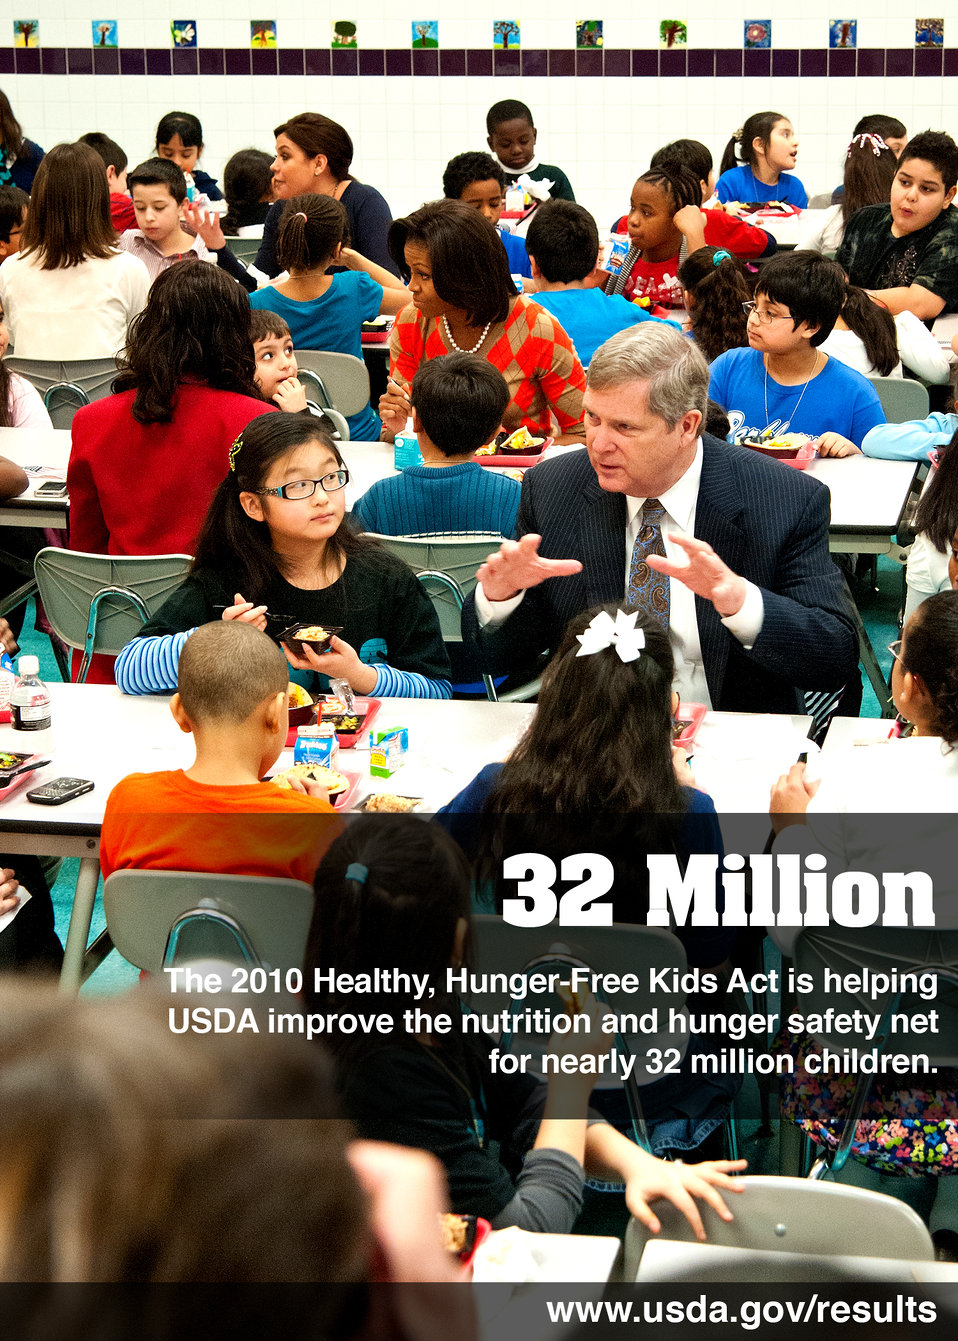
Print-Nutrition1

Agriculture Secretary Tom Vilsack joined First Lady Michelle Obama and celebrity cook Rachel Ray at Parklawn Elementary School in Alexandria, Virginia, on Wednesday, January 25, 2012 to speak with faculty and parents about the United States Department of Agriculture’s new and improved nutrition standards for school lunches. An important accomplishment of the Healthy, Hunger-Free Kids Act that President Obama signed into law last year, USDA is making the first major changes in school meals in over 15 years. The new standards encourage fruits and vegetables every day of the week, increasing offerings of whole grain-rich foods, offering only fat-free or low-fat milk and making sure kids are getting proper portion sizes.